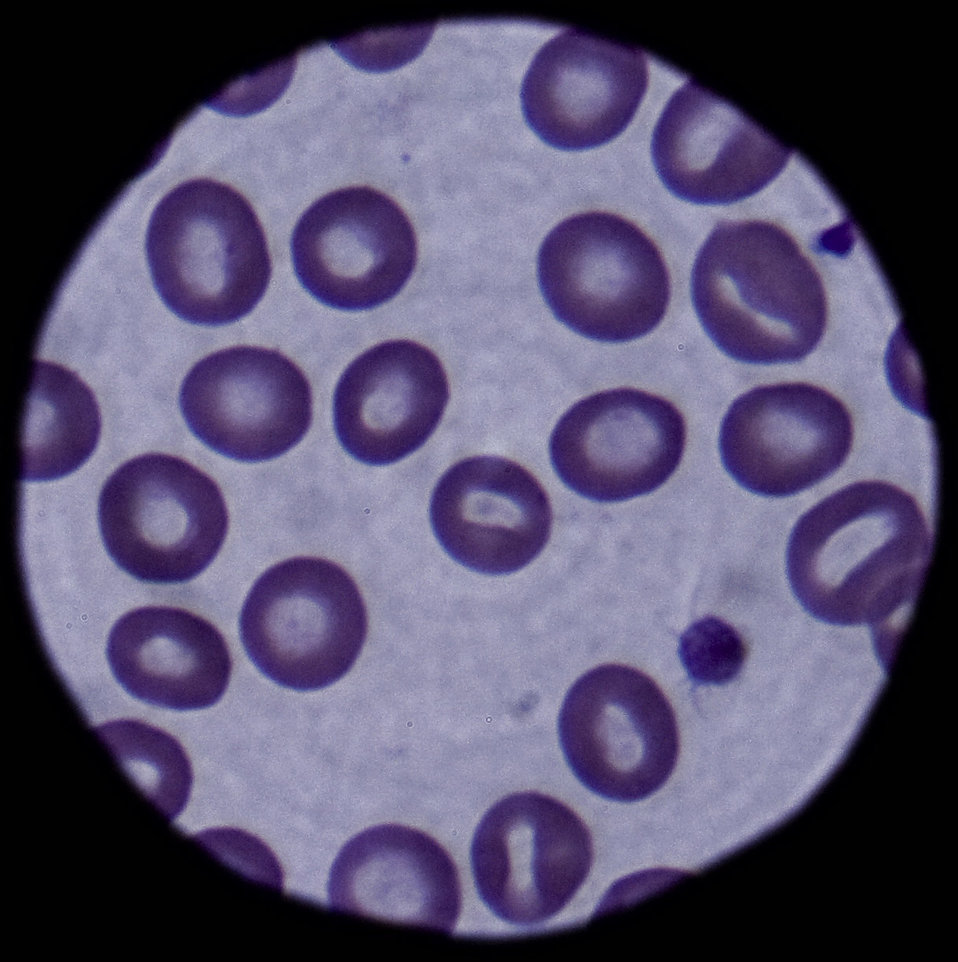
Blood work

Red and white blood cells are shown through a microscope March 4 at the 354th Medical Group laboratory at Eielson Air Force Base, Alaska. The cells are magnified 100 times, making it easier for a lab technician to count the white blood cells for signs of infection.